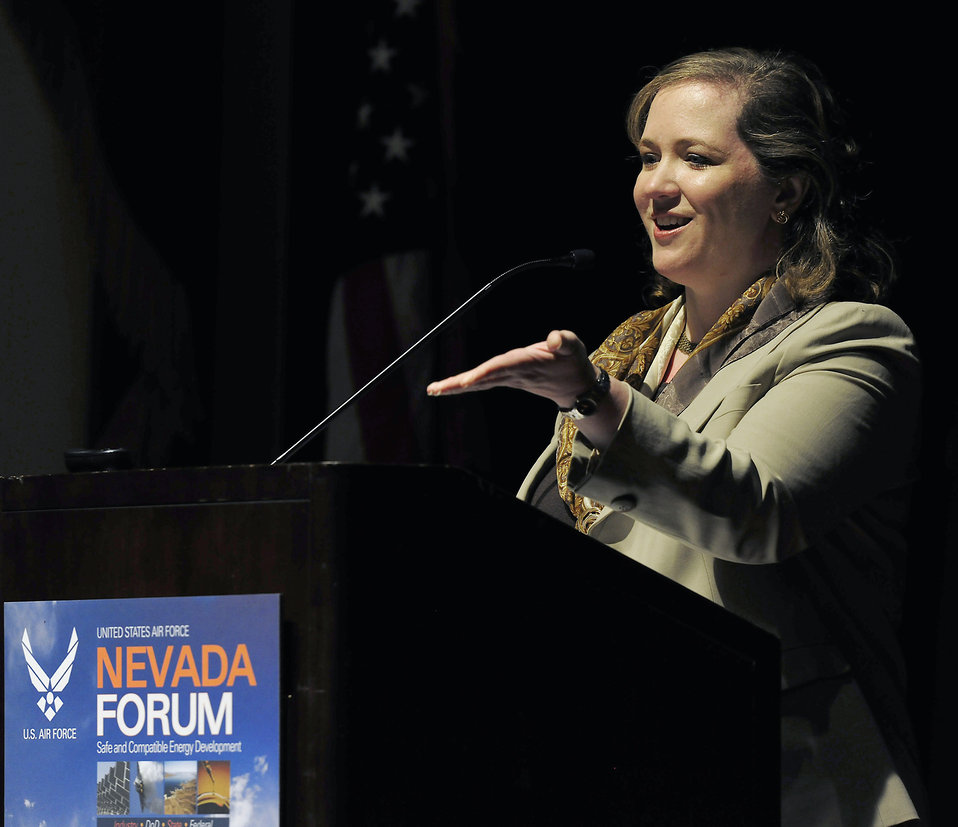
Nevada Forum

Undersecretary of the Air Force Erin C. Conaton delivers opening remarks at the Nevada Energy Forum, an Air Force-hosted three-day brainstorming to find ways for the service to reduce fossil fuels usage Aug. 24, 2010, in Las Vegas. Ms. Conaton opened the discussion with Terry Yonkers, the assistant secretary of the Air Force for installations, environment and logistics, and Nevada's Lieutenant Governor, Brian Krolicki.